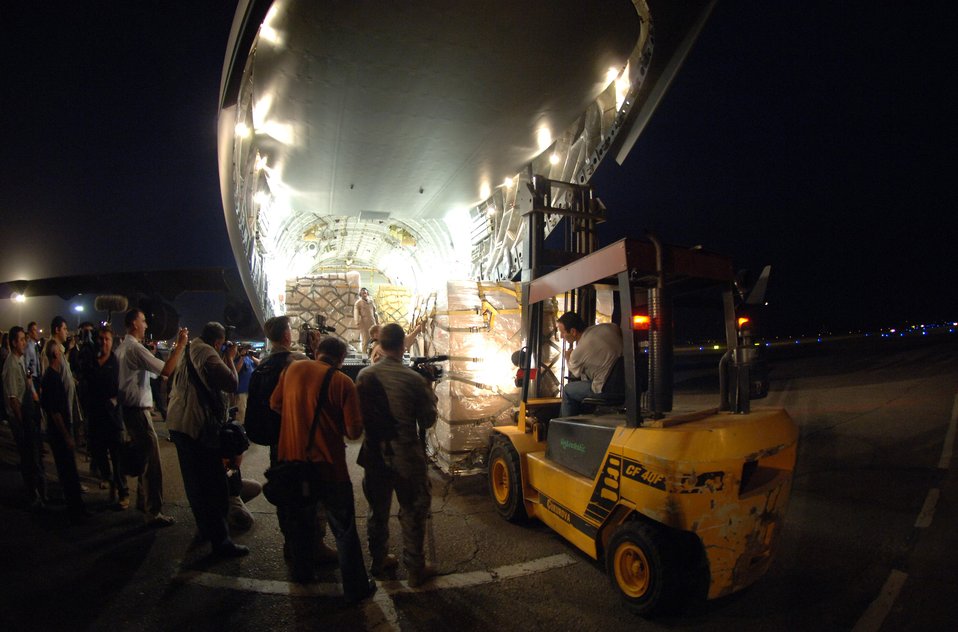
U.S. military provides humanitarian aid to Georgia

International press photograph the first of 16 pallets containing $1 million in humanitarian aid to the Republic of Georgia. The delivery was a joint-service effort between U.S Army Europe Soldiers and Airmen representing U.S. Air Forces in Europe and Air Mobility Command.